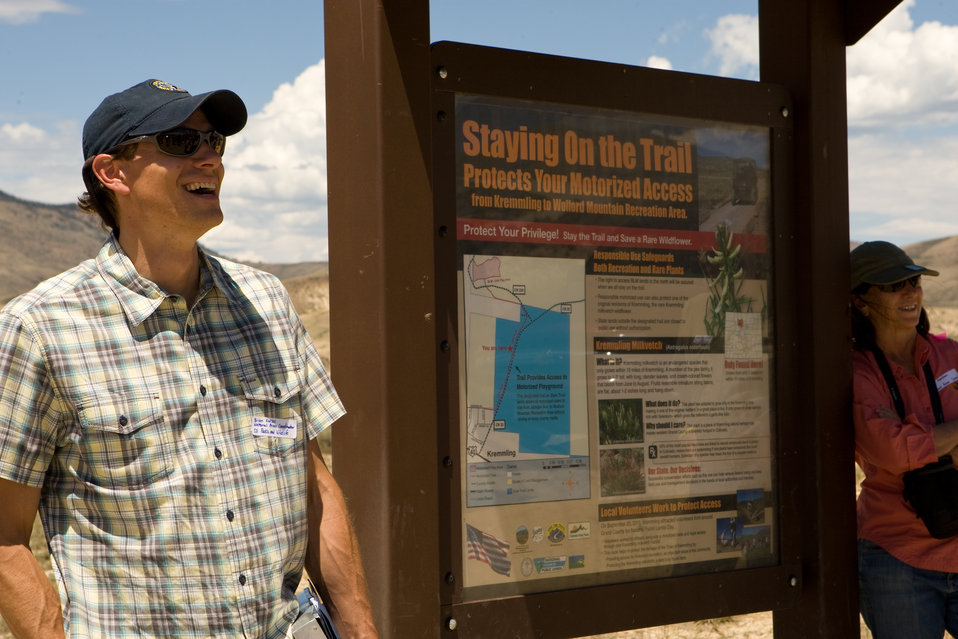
Natural Areas Program Kiosk in Kremmling

The Colorado Rare Plant Conservation Initiative (RPCI) is a partnership of 23 statewide and regional agencies, private organizations, and academic institutions working to conserve 121 rare plants in Colorado. As part of these efforts the group developed the Colorado Rare Plant Conservation Strategy, developed Best Management Practices to reduce energy development impacts, addressed climate change, and developed focused strategies for the conservation of individual species at eight priority landscapes. The group has also worked to coordinate volunteer efforts for plant conservation across the state.